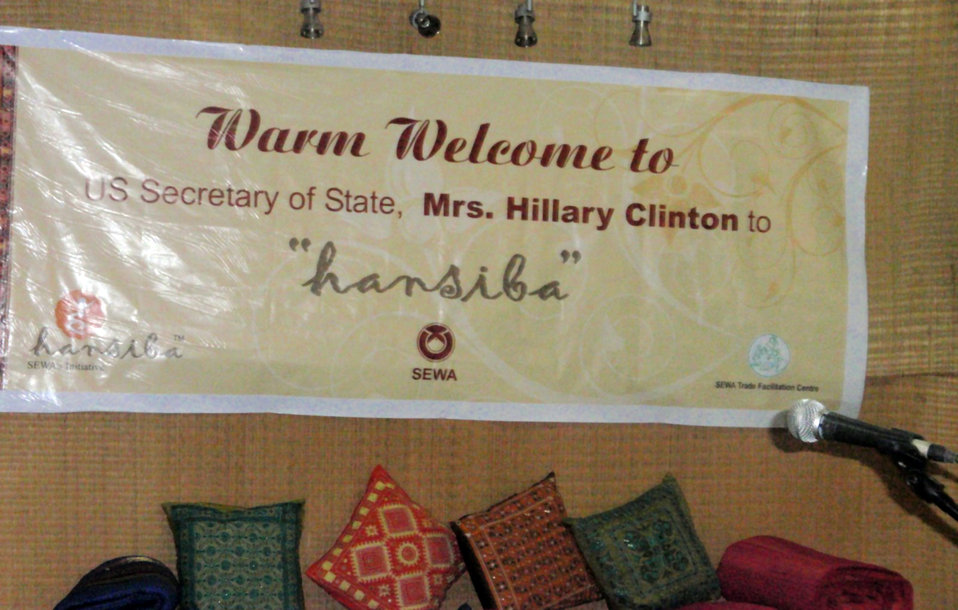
Behind the Scenes: SEWA Hansiba Store

SEWA (Self Employed Women's Association) Hansiba store welcomes U.S. Secretary of State Hillary Rodham Clinton with a banner in Mumbai, India July 18, 2009.